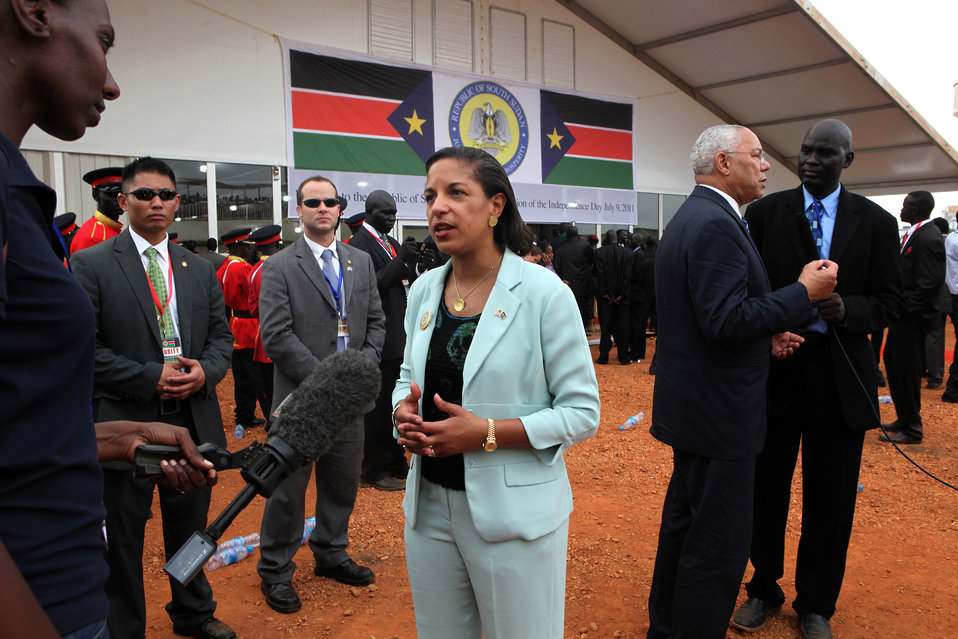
South Sudan Independence Day

Ambassador Susan E. Rice, U.S. Permanent Representative to the United Nations, speaks to CNN International, while Ret. General Colin Powell, former Secretary of State, speaks to South Sudan Television (SSTV), during the Republic of South Sudan Independence Day celebrations in Juba, South Sudan on July 9, 2011.